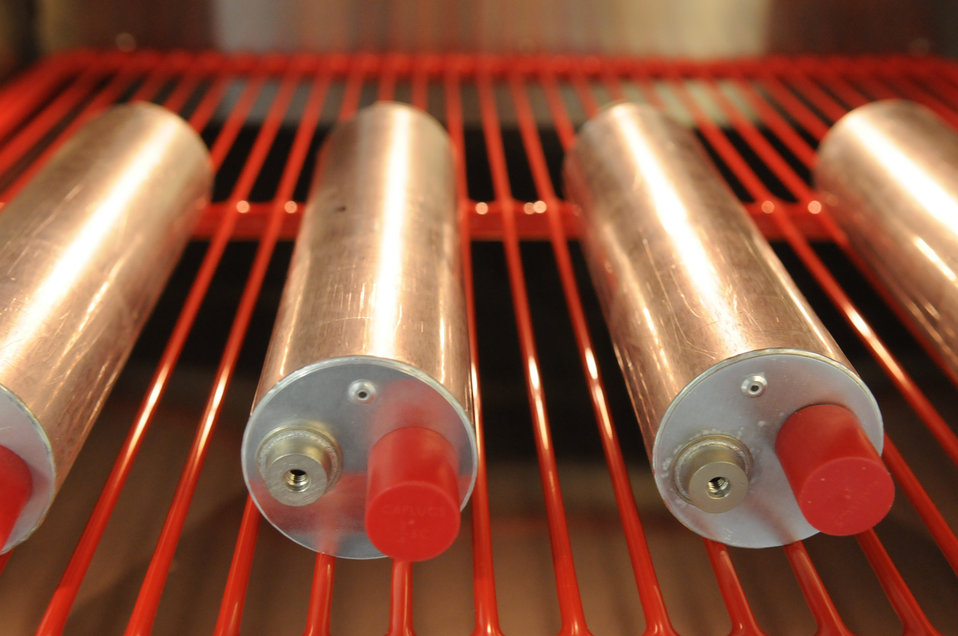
Argonne National Laboratory is already renowned battery research program will take a significant leap forward with the addition of three new facilities.

Argonne National Laboratory is already renowned battery research program will take a significant leap forward with the addition of three new facilities: Cell Fabrication Facility, Materials Production Scale-Up Facility and Post-Test Analysis Facility. The fabrication facility will include designed to improve the quality and evaluate the performance of newly fabricated cells. The scale-up facility will help develop manufacturing processes for producing advanced battery materials in sufficient quality for industrial-scale testing. The post-test facility will help researchers understand the changes that occur in materials as a battery ages from use or testing.